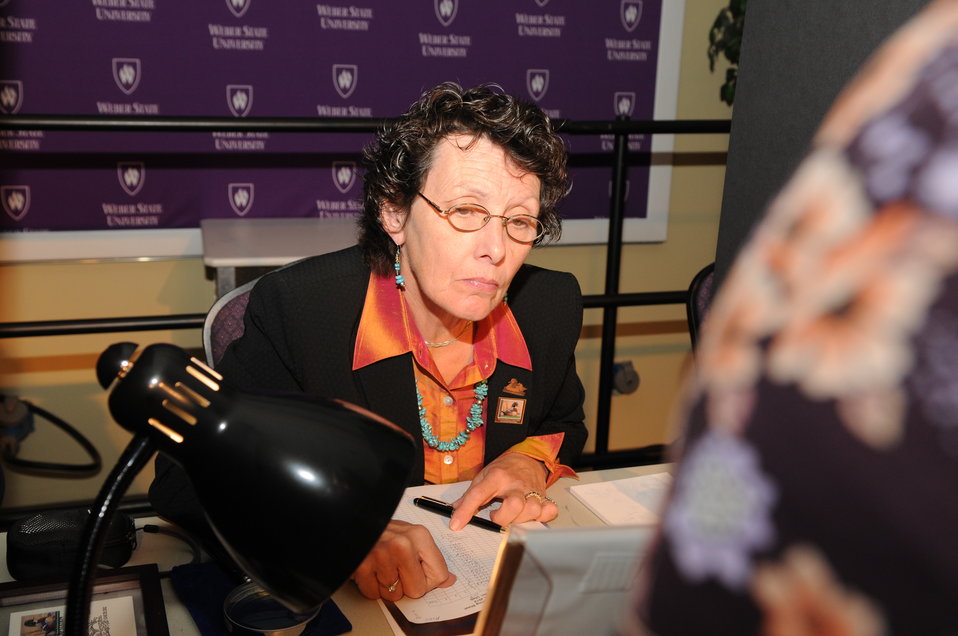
Judging

The U.S. Fish & Wildlife Service sponsored the 2012 Federal Duck Stamp Art Contest September 28 and 29 in Ogden, Utah, at Weber State University. A panel of five judges was responsible for choosing the art work used to design the 2013-2014 Migratory Bird Hunting and Conservation Stamp.